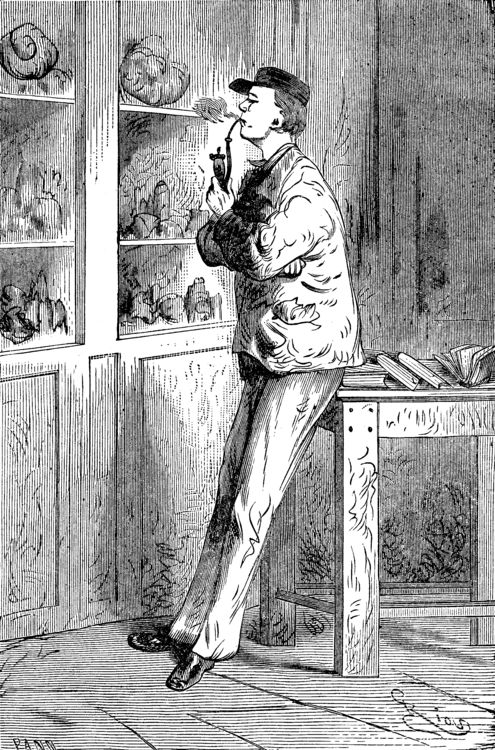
An ilustration from the novel 'Journey to the Center of the Earth' by Jules Verne painted by Édouard Riou. Polski: Ilustracja powieści Juliusza Verne'a 'Wyprawa do wnętrza Ziemi' autorstwa Édouarda Riou. Français : 'Voyage au centre de la Terre', Édouard Riou. Français : Je me croisai les bras et j’attendis.